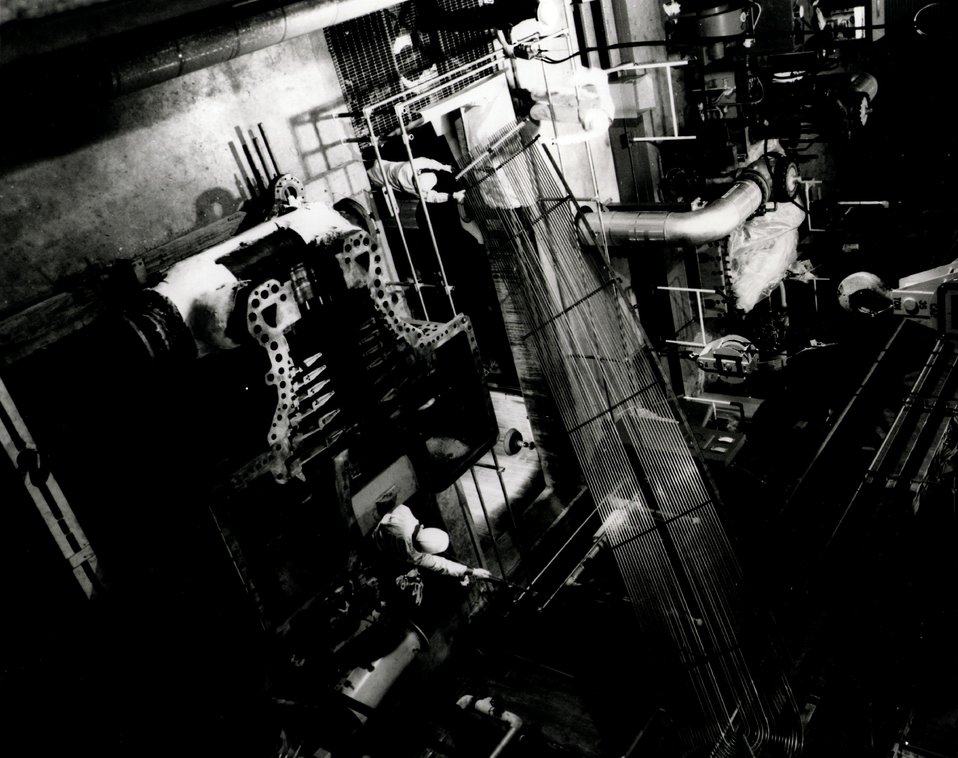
A 25-foot long newly fabricated Inconel tube panel is lowered through the turbine bay floor on its way to installation in a steam generator at Hanford's 800 Mwe N-Reactor.